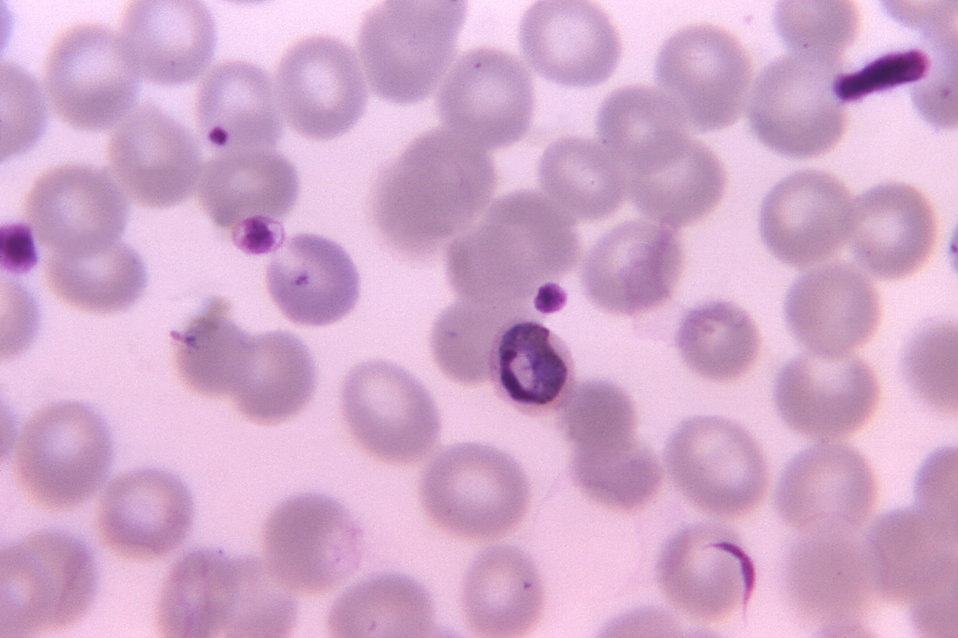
This thin film micrograph shows an old growing Plasmodium malariae trophozoite using Giemsa stain; Magnified 1125X.